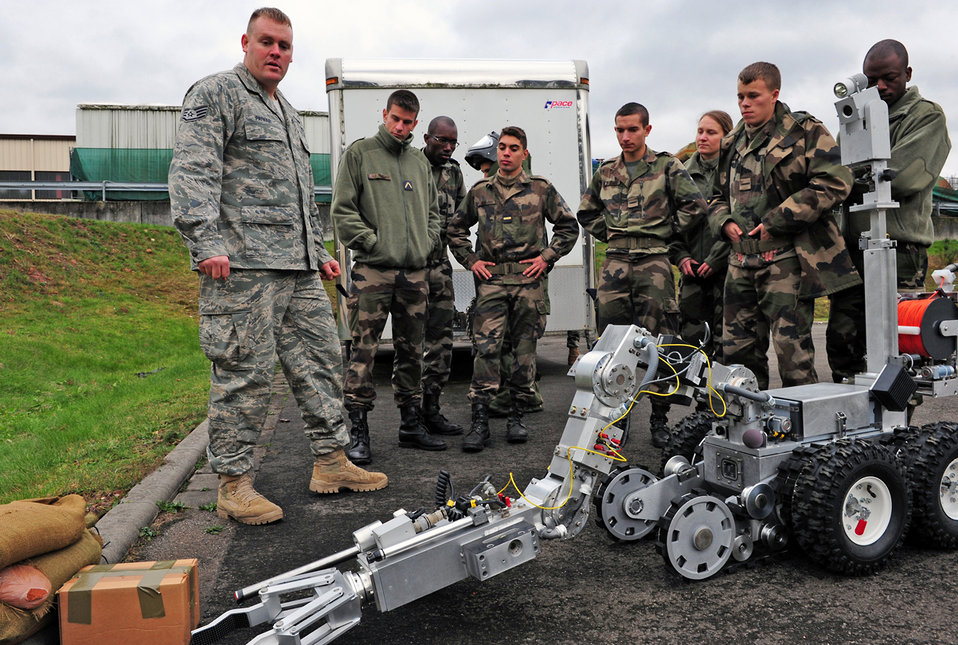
Exchange programs

Staff Sgt. Kristopher Parker briefs French air force cadets on particulars of the F6A robot, Nov. 16, 2010 at Ramstein Air Base, Germany. The cadets visited several locations on base during the tour. Sergeant Parker is with the 886th Civil Engineer Squadron there.